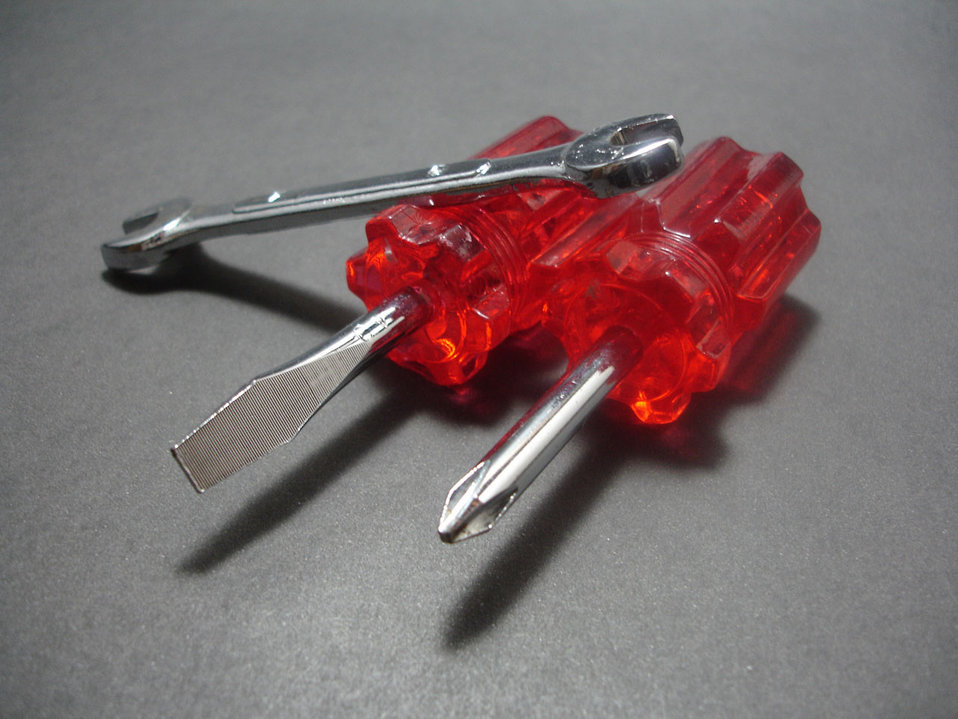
Some tools.